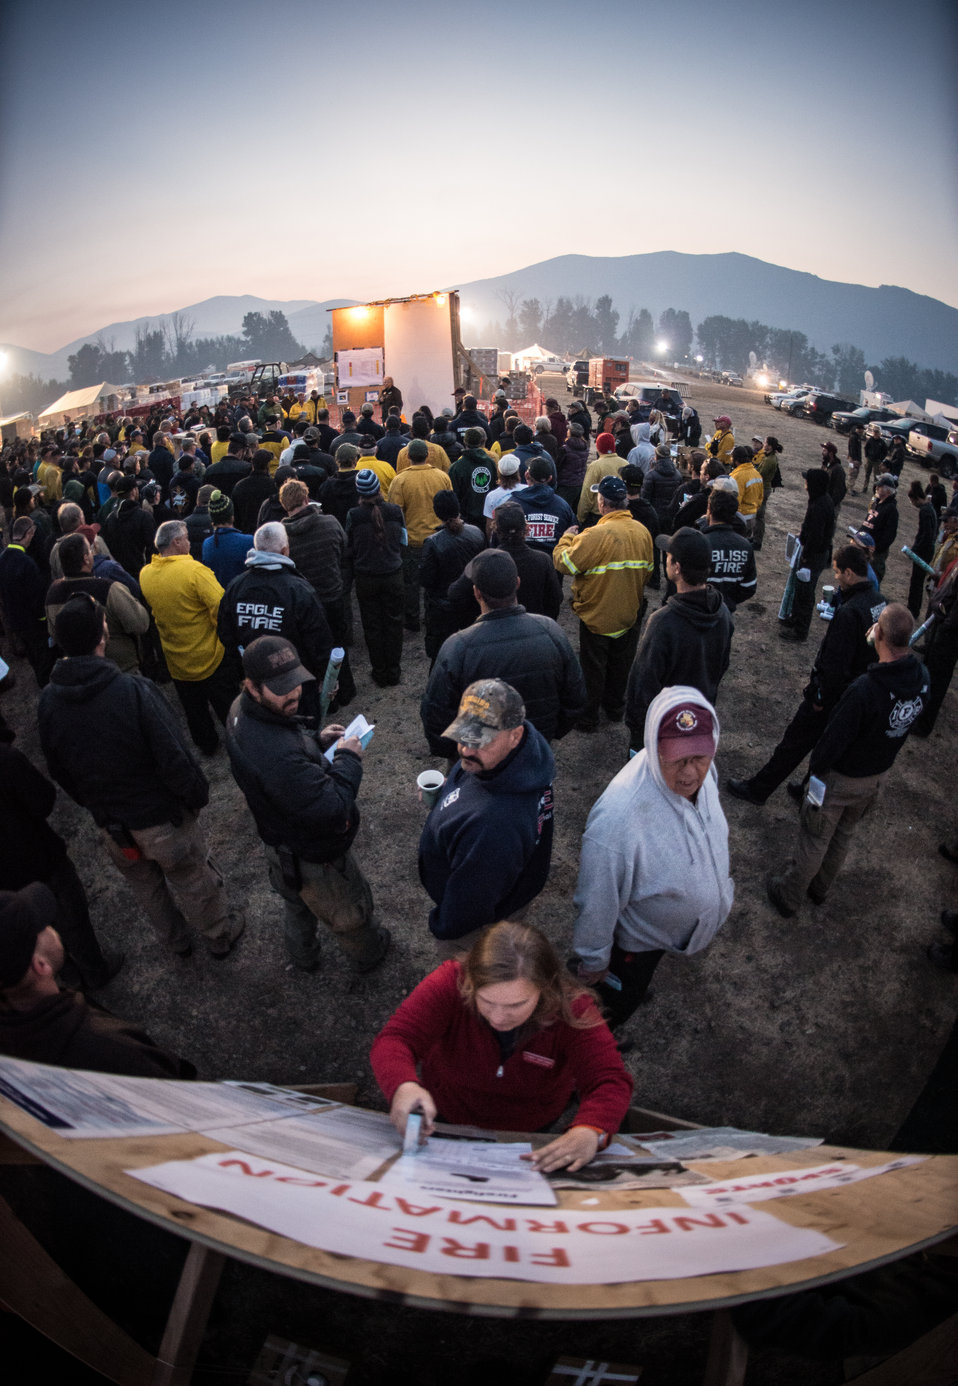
Following the morning briefing, with the sun about to rise over the horizon, Division/Group leaders meet with their key personnel at the Beaver Creek Fire Incident Command Post, before heading, west of Hailey, ID, to continue the fire fighting operations, on Tuesday, Aug 20, 2013.